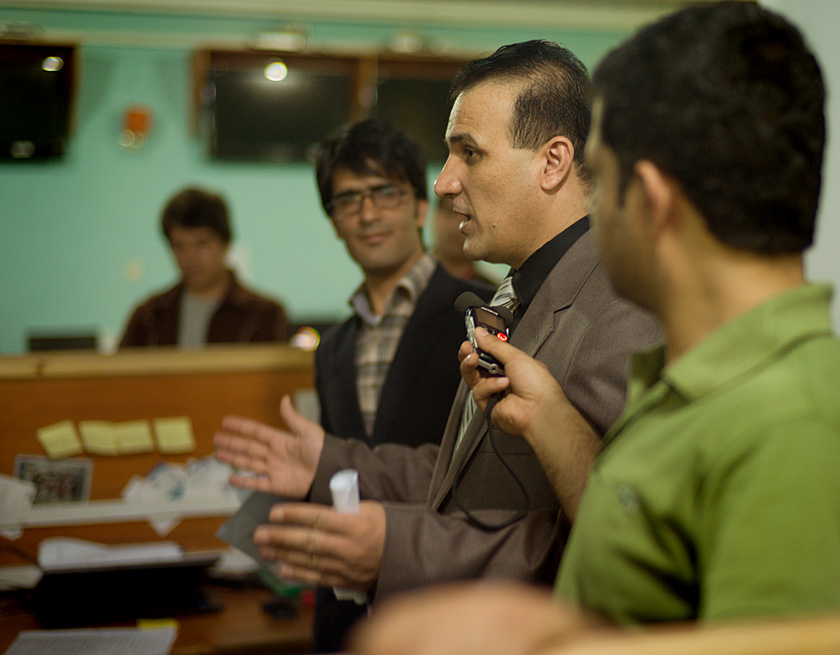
DM InfoandCulture, Temorsha Ashaqzai